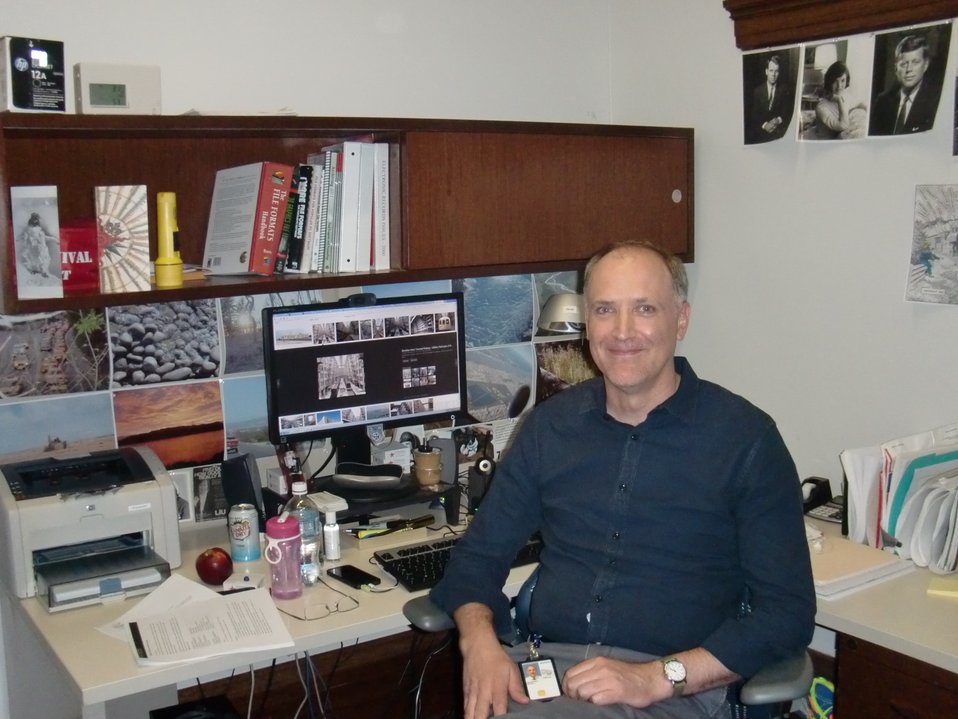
Electronic Records Format Specialist Kevin DeVorsey at his desk; Location: National Archives at New York, New York, New York